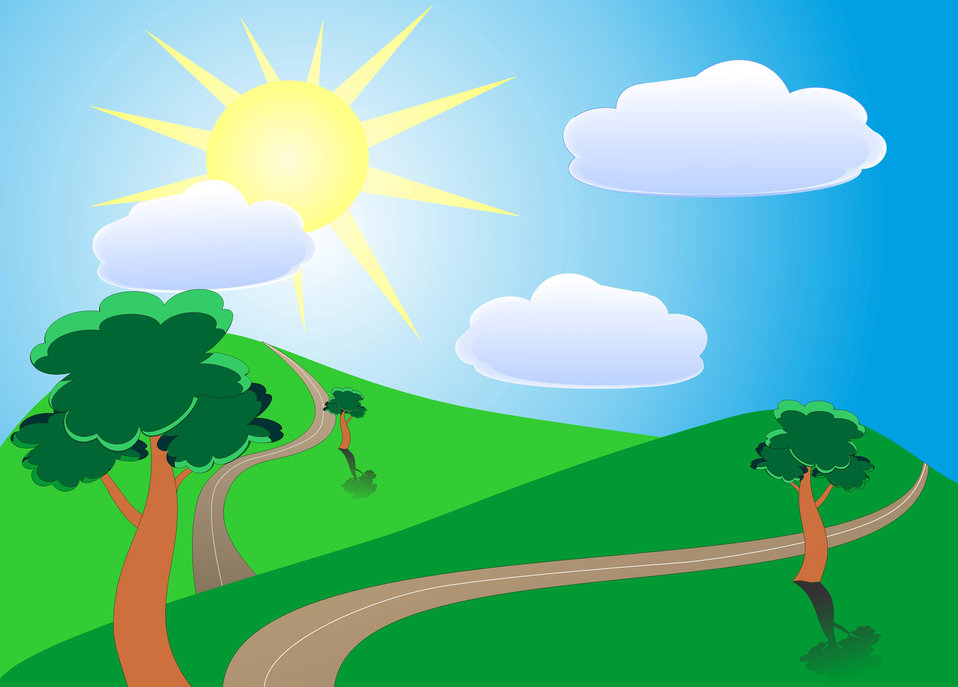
Summer day

Illustration of the landscape.